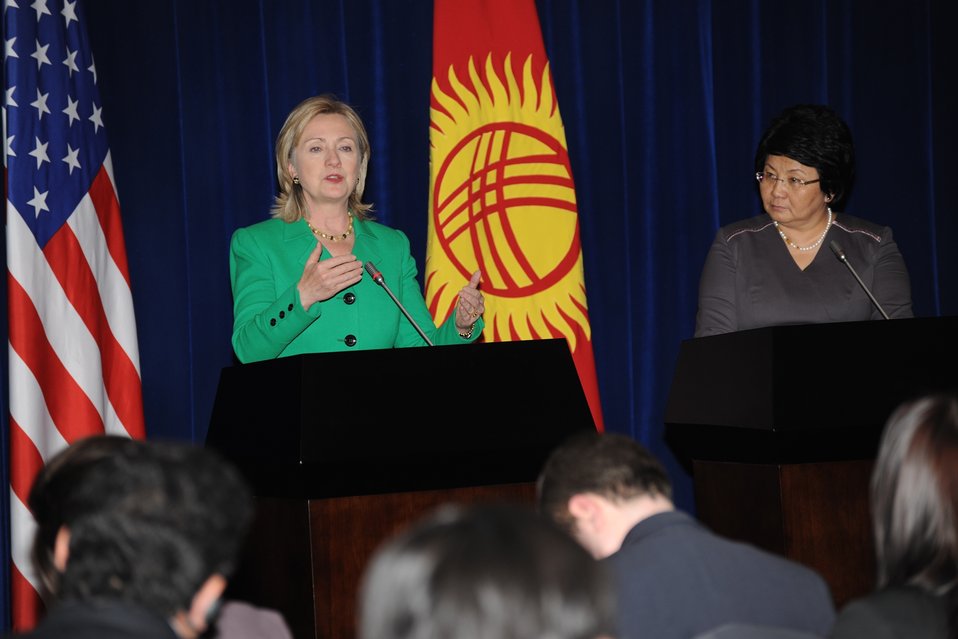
Secretary Clinton and Kyrgyz President Otunbaeva Hold a Press Conference

U.S. Secretary of State Hillary Rodham Clinton and Kyrgyz President Roza Otunbaeva hold a press conference at the Ala Archa Presidential Residence in Kyrgyzstan on December 2, 2010.